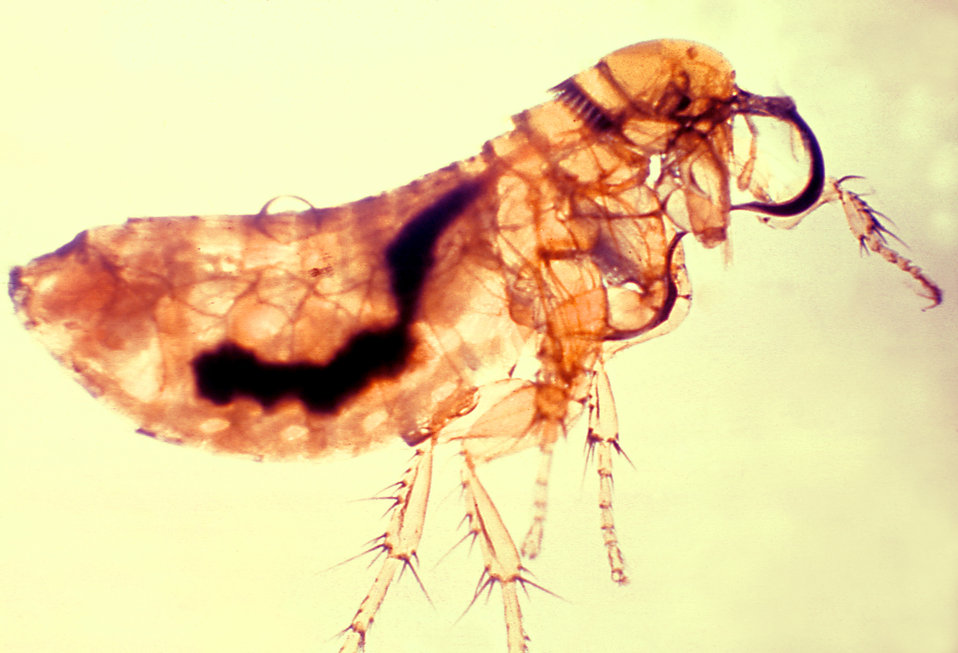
Thrassis bacci johnsoni 41 days after infection with Pasteurella (Yersinia) pestis.